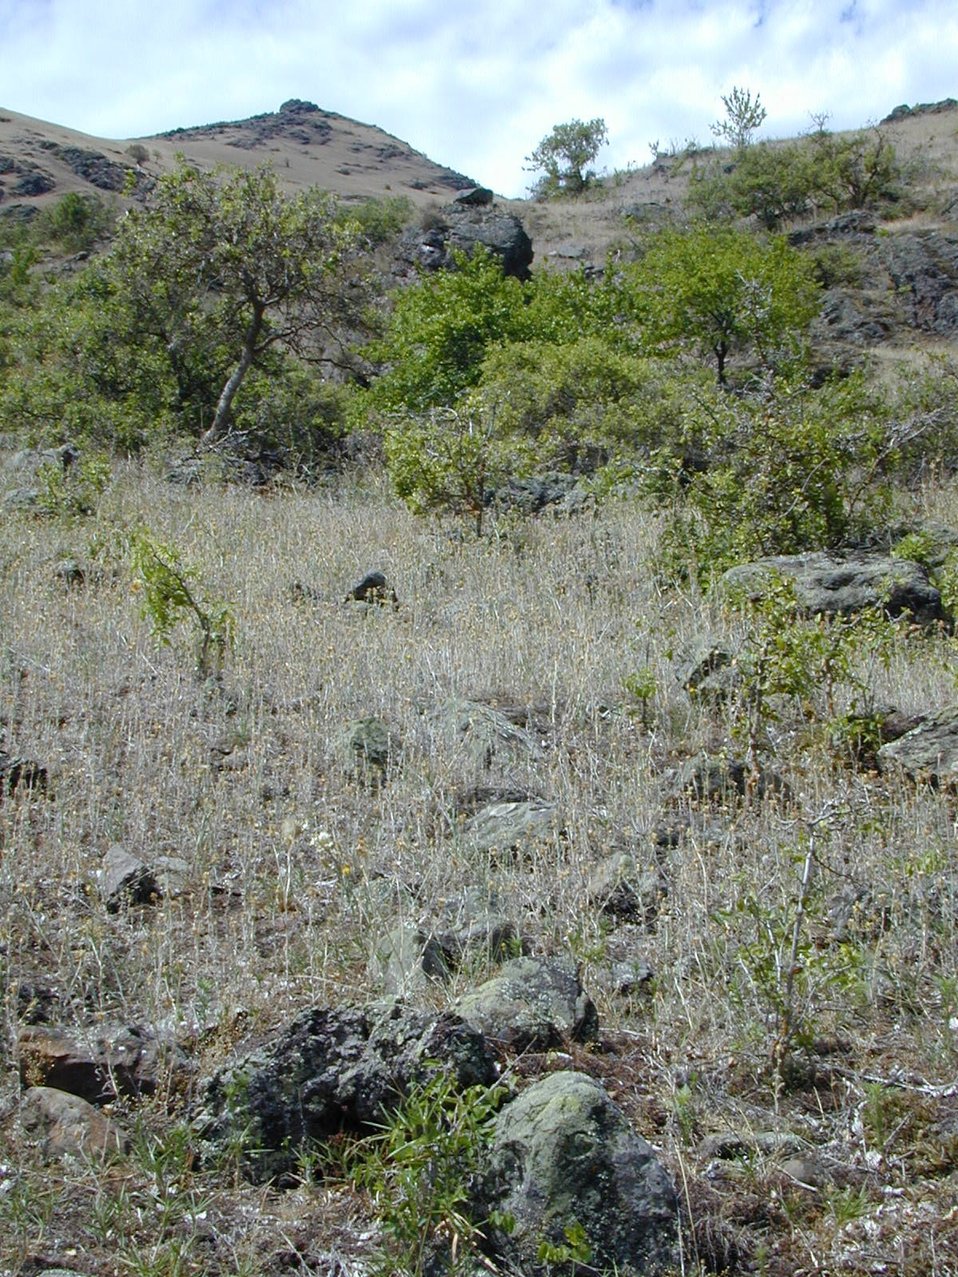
Hackberry Cottonwood Field Office UCSC Upper Columbia Salmon Clearwater Districtr